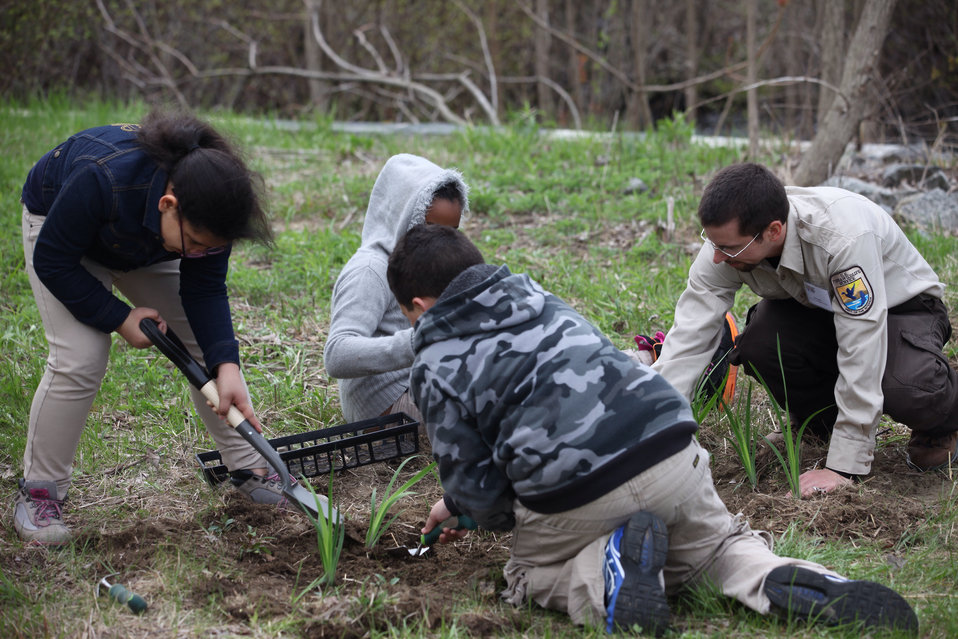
Students helping to beautify the partnership site

Area students are planting native plants at the urban partnership site.